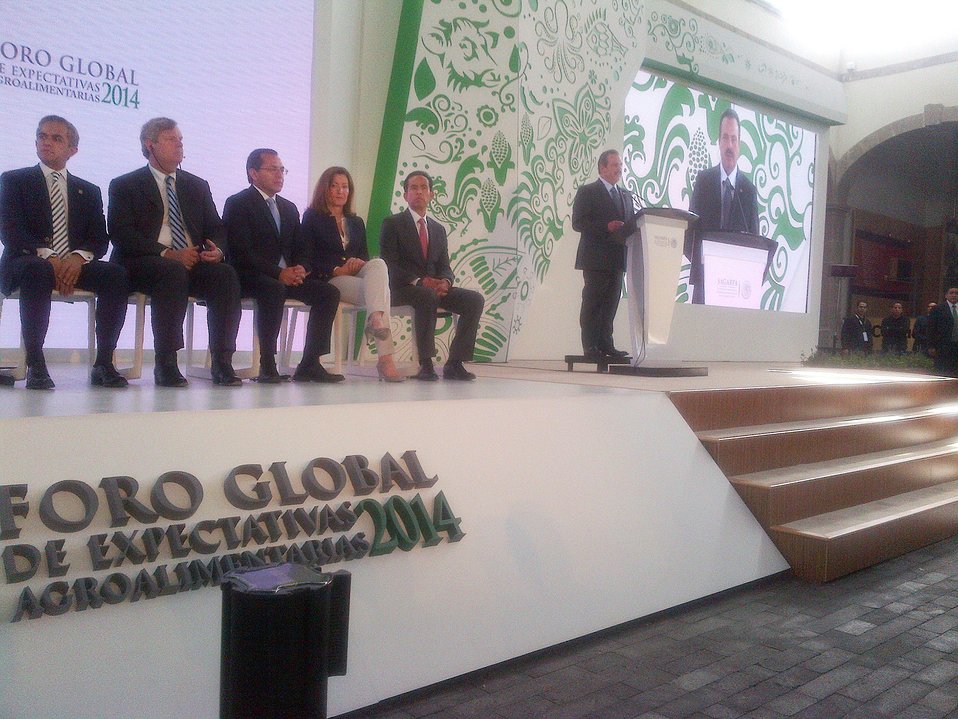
Secretary of Agriculture, Livestock, Rural Development, Fisheries and Food (SAGARPA) Martinez y Martinez speaks at the 2014 Mexican Global Forum on Agricultural Expectations in Mexico City, Mexico, on Monday, May 19, 2014. (L to R Mexico City Federal District Governor Miguel Mancera, Agriculture Secretary Tom Vilsack, Guatemalan Agricultural Minister Elmer Lopez Rodriguez, FAO Representative Nuria Urquia, Mexico Secretary of Agriculture and Animal Husbandry Desarrollo Rural, Mexico Fisheries and Food (SAGRPA) Under Secretary for Agribusiness and Competitiveness Ricardo Aguillar).